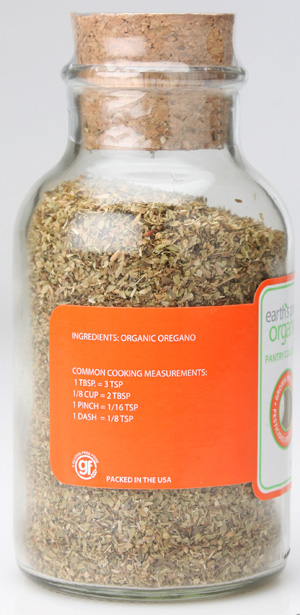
RECALLED - Organic Oregano

July 12, 2013 - Product Recall - Olde Thompson Inc. Issues a Voluntary Recall of Earth’s Pride Organics: Organic Oregano 2.2 Oz Glass Jars With Cork Closure Due to Possible Salmonella Risk.